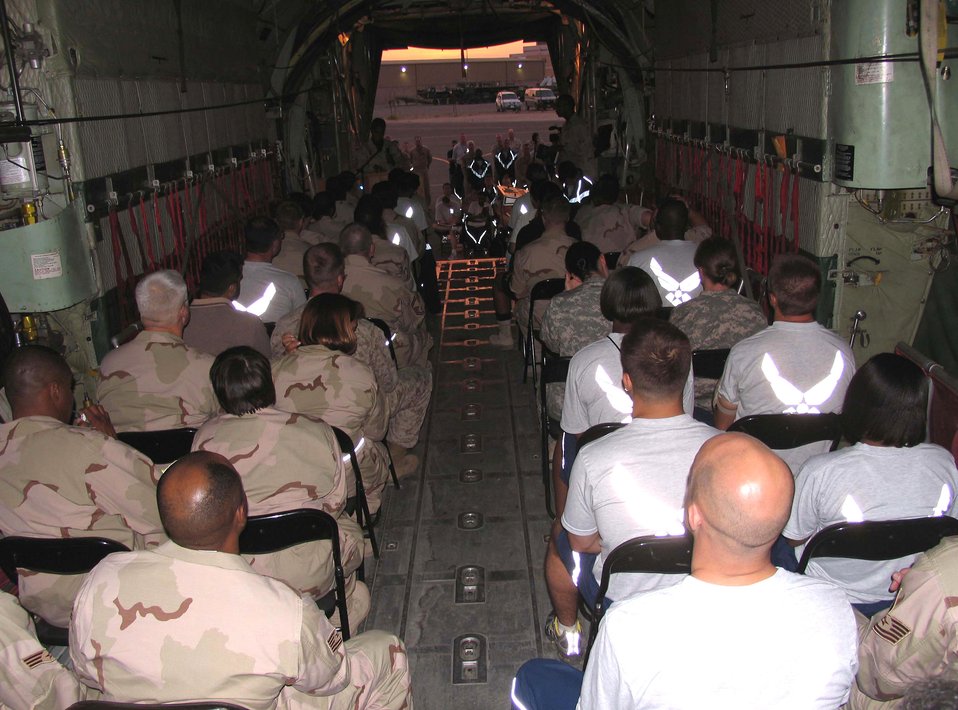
Sunrise service

Members of the 386th Air Expeditionary Wing sing hymns during the Easter sunrise service on Sunday, April 16, 2006, at a forward deployed location in Southwest Asia. More than 100 servicemembers attended the service held inside a C-130 Hercules.